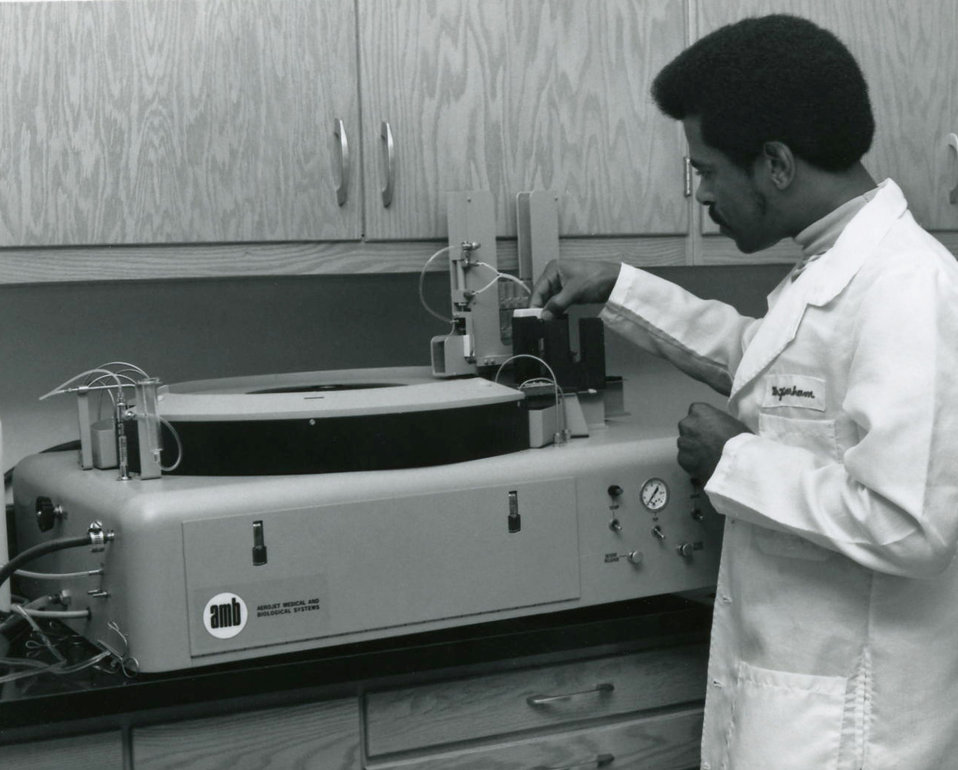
This historic photograph depicted Mr. Charles E. Parham of the Centers for Disease Control and Prevention as he was adjusting an automated fluorescence antibody test machine often used in the identification of Treponema pallidum, the bacterial pathogen responsible for causing syphilis.